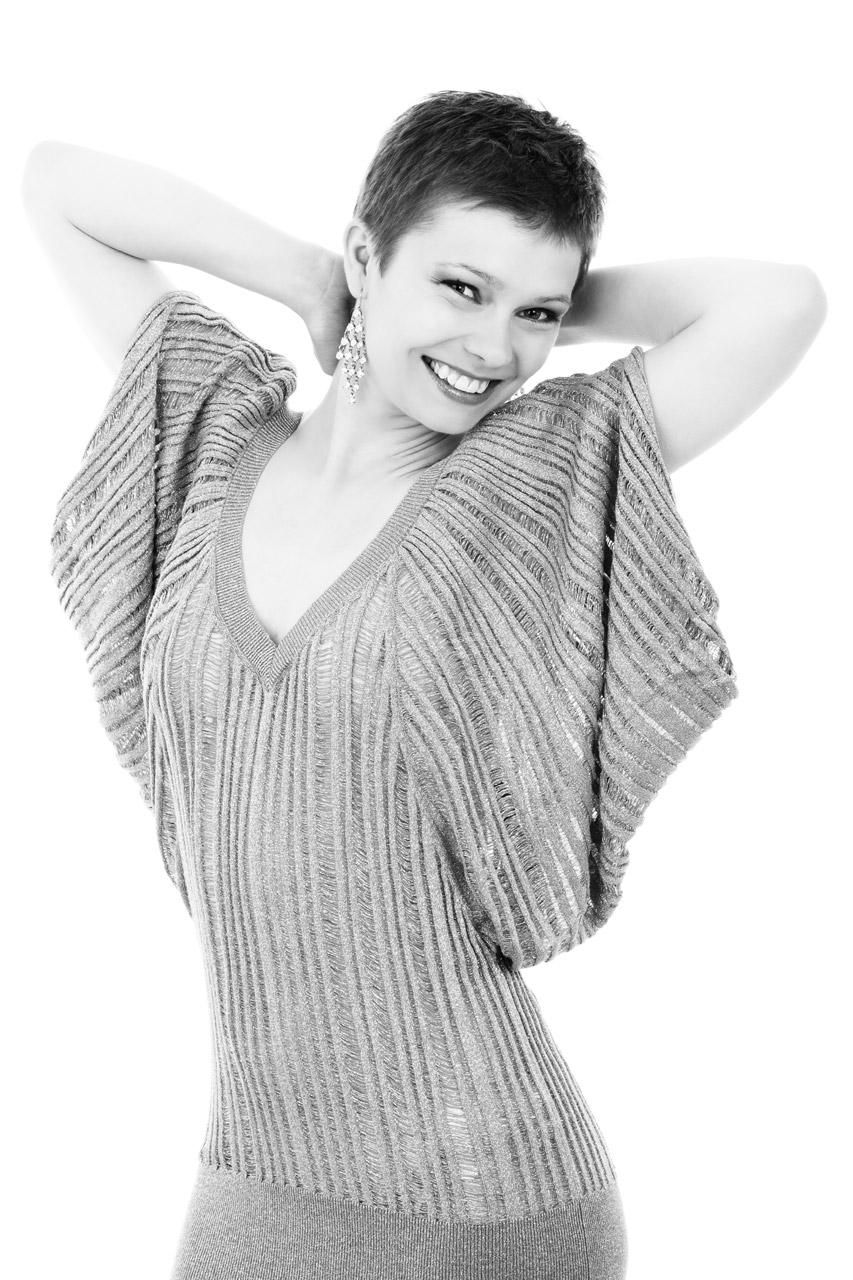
Fashion model posing

Young fashion model posing isolated on white background. black and white photo..